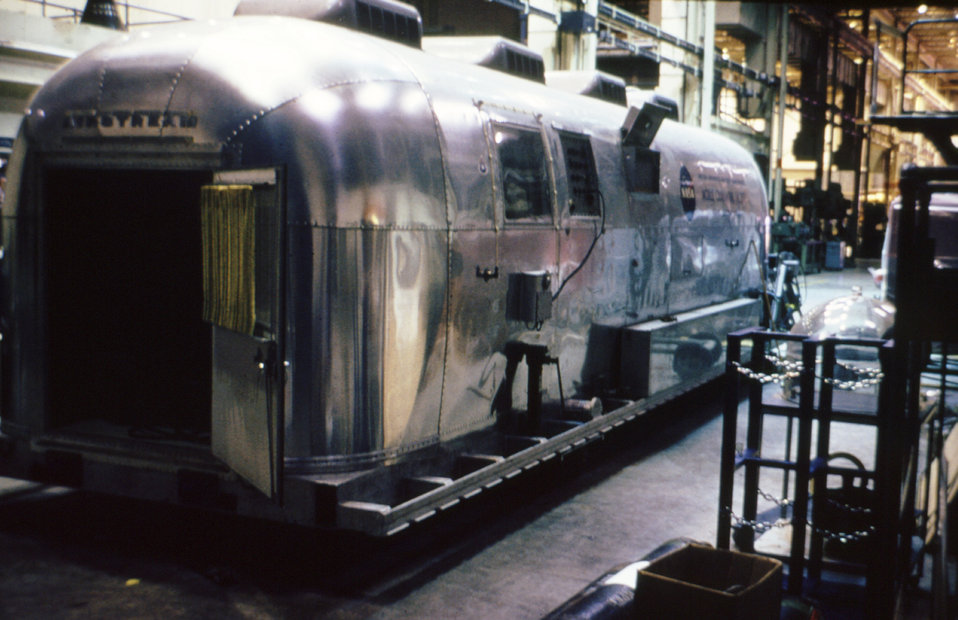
This mobile quarantine facility, or MQF, shown here in a CDC warehouse, was used as an isolation compartment in a Lassa fever case in the 1975, when it transported a patient, Kent Campbell, M.D., M.P.H., from London, to New York City on a C-141 aircraft.